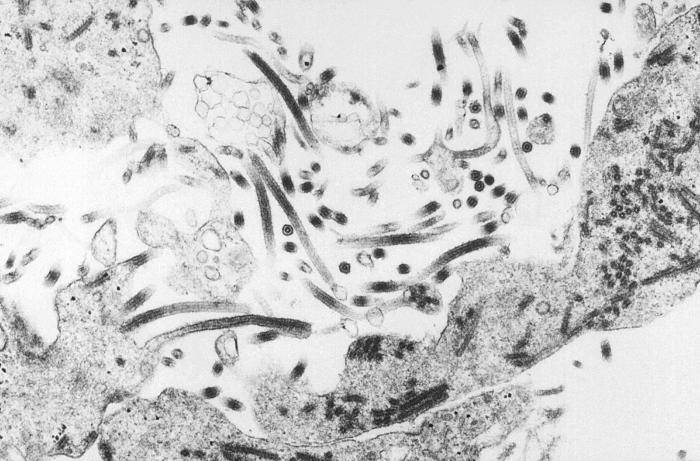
Created by CDC microbiologist Dr. Fredrick Murphy, this thin section transmission electron micrograph (TEM) revealed some of the ultrastructural morphologic features displayed by the Ebola virus, which had been cultivated using a 3d culture method.